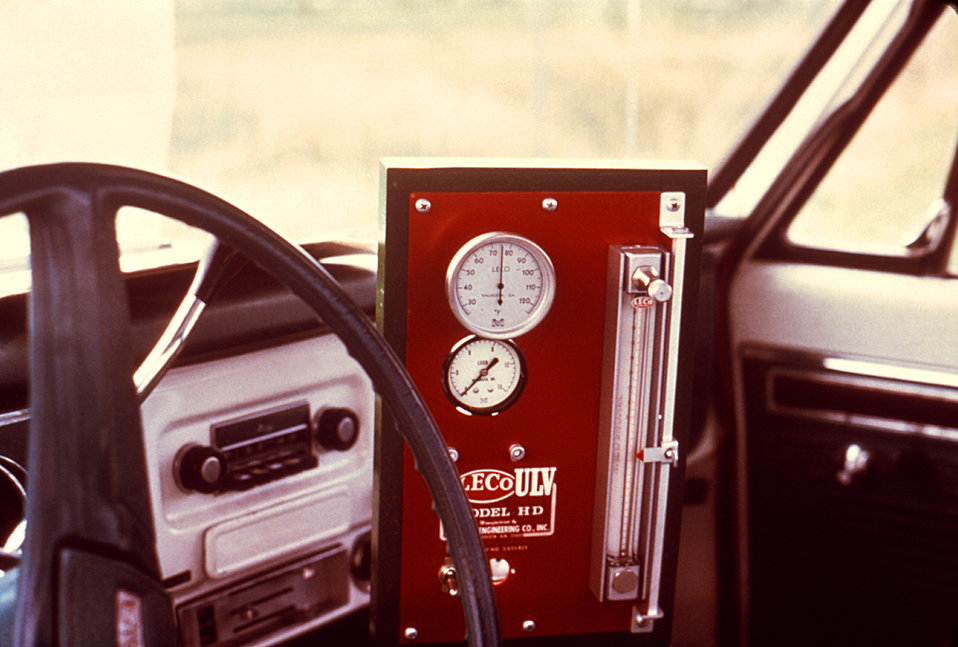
This 1981 image depicts a close-up perspective of a truck-mounted LECO-HD ULV (ultra-low volume) non-thermal fog generator's control panel located in the truck's cab, allowing the truck's driver to regulate the insecticide concentrations, and fog output rate.